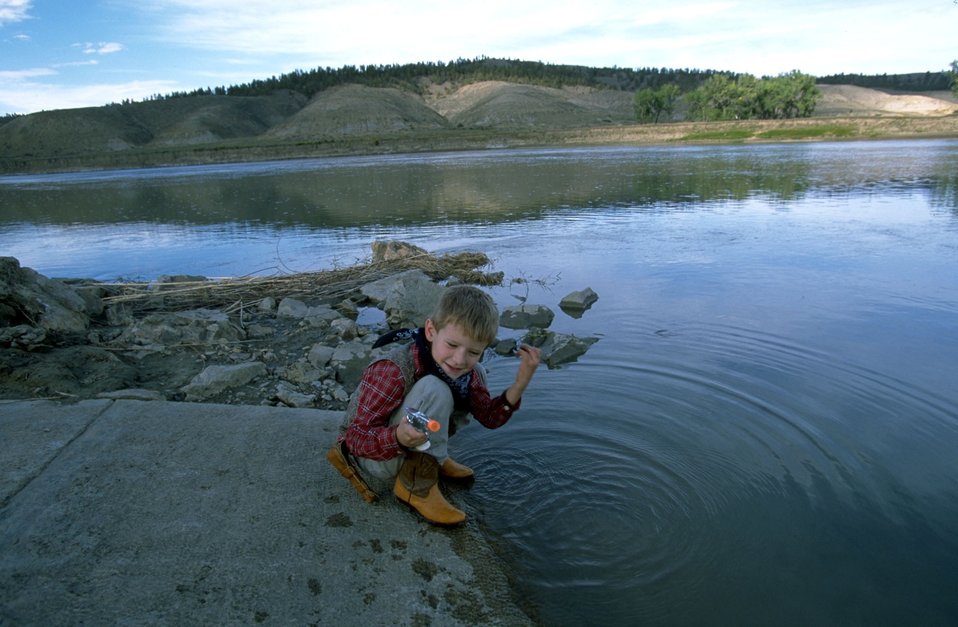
Young outdoorsman at Kipp Recreation Area